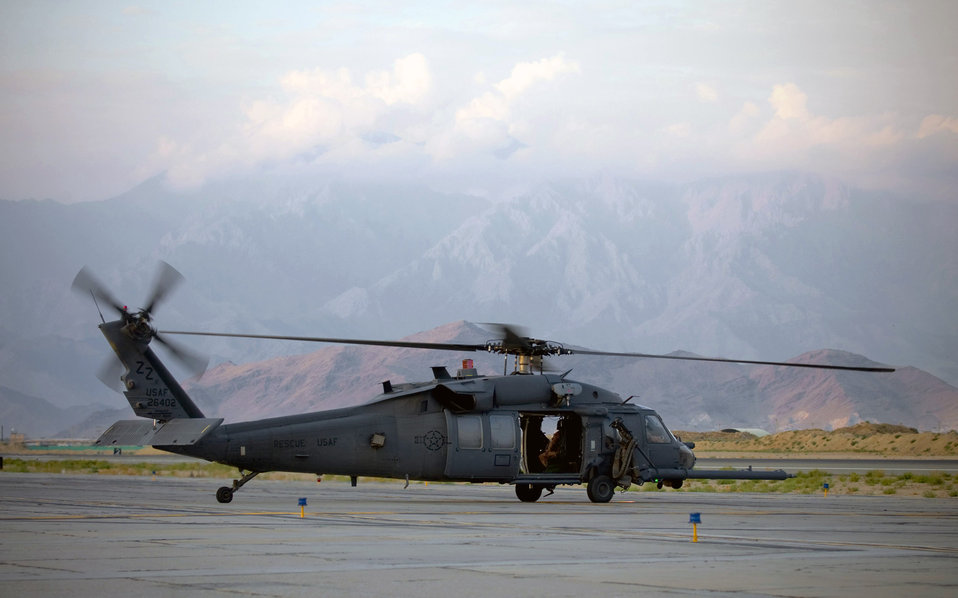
Flying with the Pave Hawks

An HH-60G Pave Hawk readies for takeoff Aug. 2 at Bagram Air Base, Afghanistan. The Pave Hawk is currently the primary combat search and rescue platform, and is capable of performing its mission even in adverse conditions.